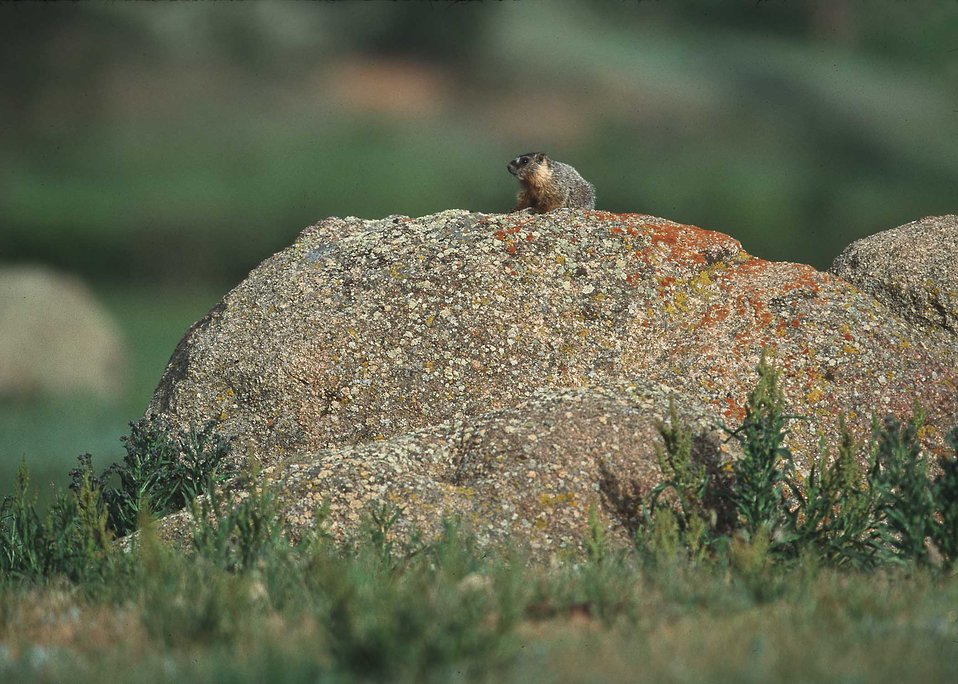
Yellow Bellied Marmot, near RMNP.